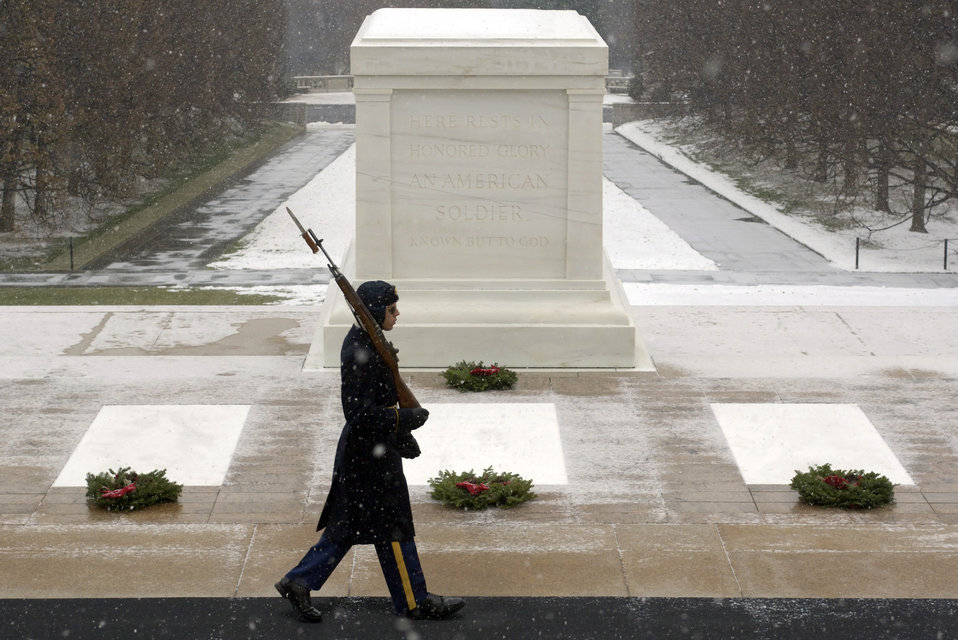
Honoring heroes

ARLINGTON, Va. (AFPN) - An Arlington Honor Guardsman walks his post past the tomb of the Unknown Soldier. The tomb was one of more than 5,000 headstones decorated by volunteers. The 14th annual wreath laying event is the result of Worcester Wreath Company's owner Morrill Worcester's, childhood dream of doing something to honor those laid to rest in the national cemetery.